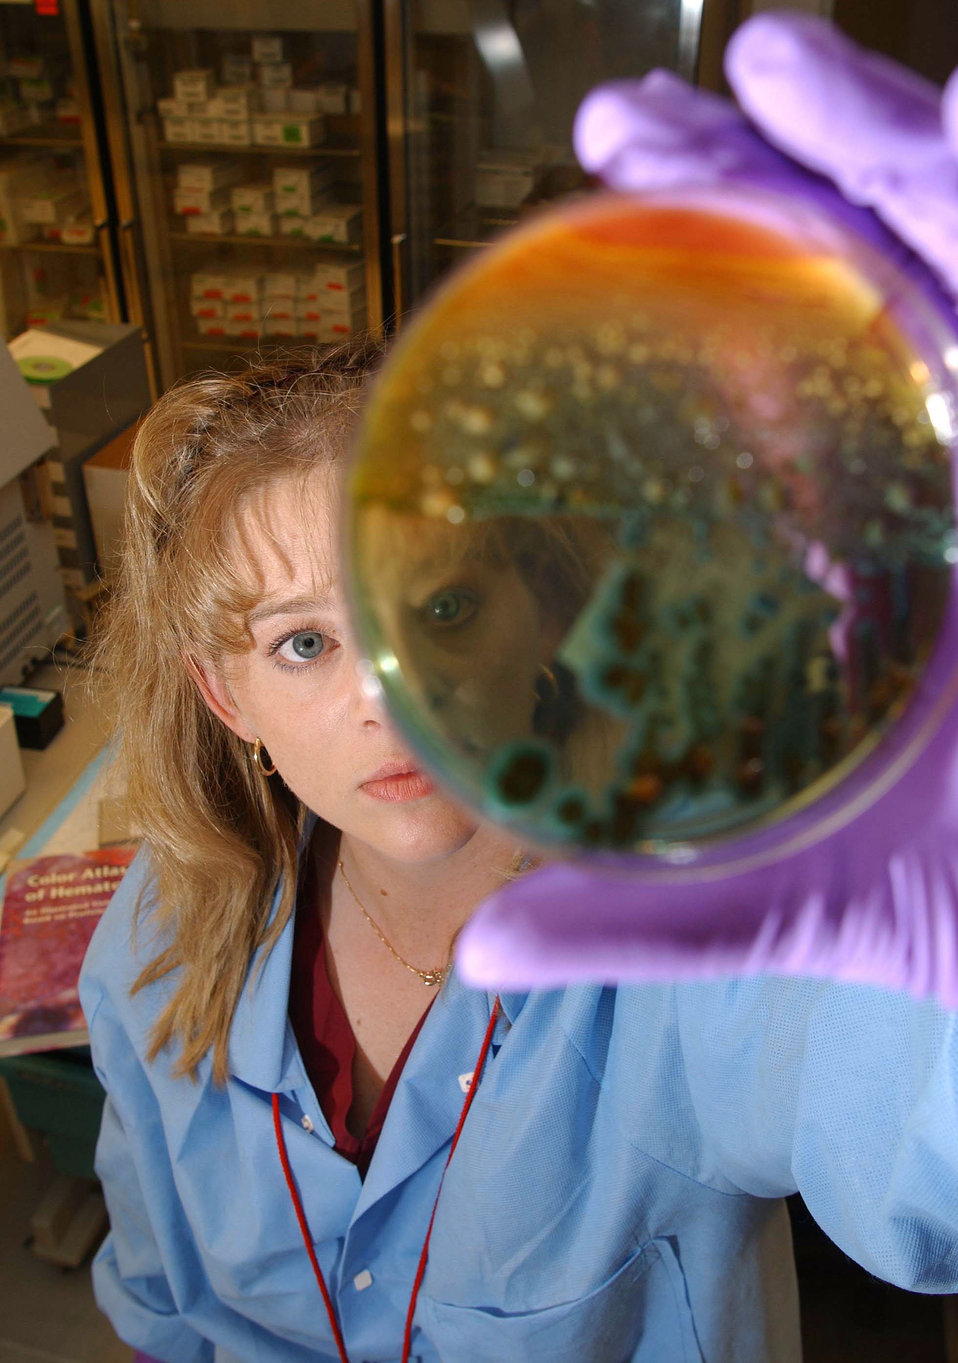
What have we here?

INCIRLIK AIR BASE, Turkey -- Meredith Welsh examines a stool sample in the medical clinic laboratory here. The testing is part of a study designed to standardize treatment of diarrhea. She is a medical technologist assigned to the 39th Medical Group.